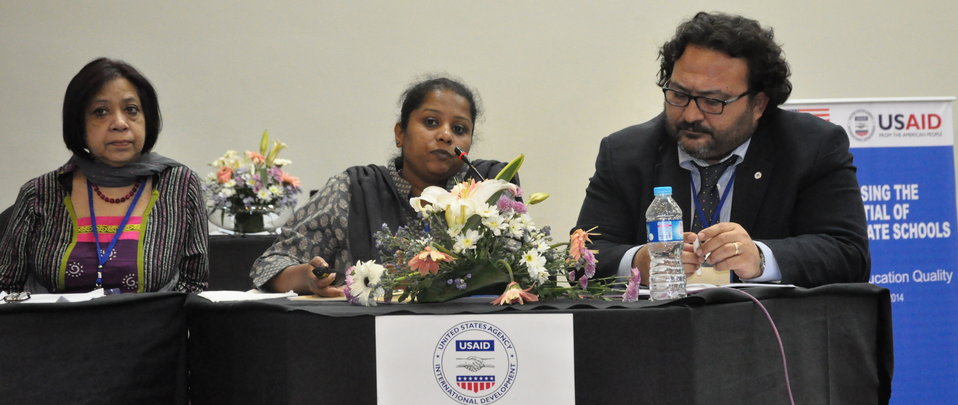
Left to right: Delegates Tasneem Athar(Bangladesh), Sujatha Muthayya (India) and Kayhan Karli (Turkey) presenting case studies from their respective countries